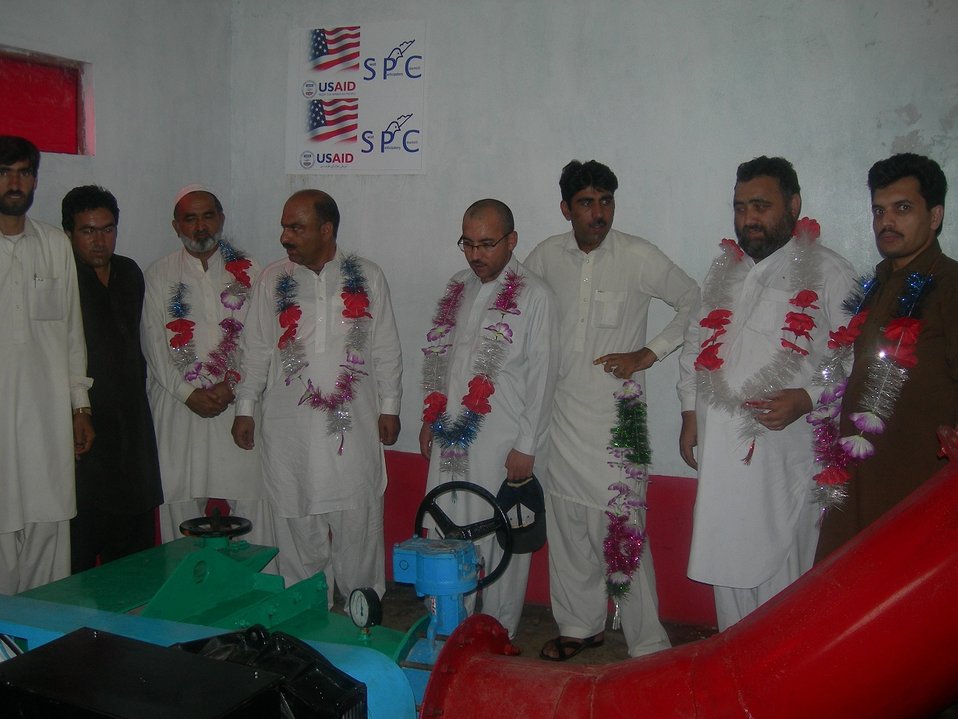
Dignitaries and Guests

A new wave of energy has swept a remote village of Matta Tehsil. Children are excited, elders relieved. Electricity had lit their dark houses after over six decades of independence and connected them to the modern world.
“We can now watch cartoons on the TV just like all the other children,” said an excited child during the inauguration of a micro-hydropower station on Saturday.
The community-based power station, which will supply electricity to about 110 households in Swatai village, has been installed with the assistance of Small Grants Ambassador Fund Program of the USAID in collaboration with the Swat Participatory Council (SPC).